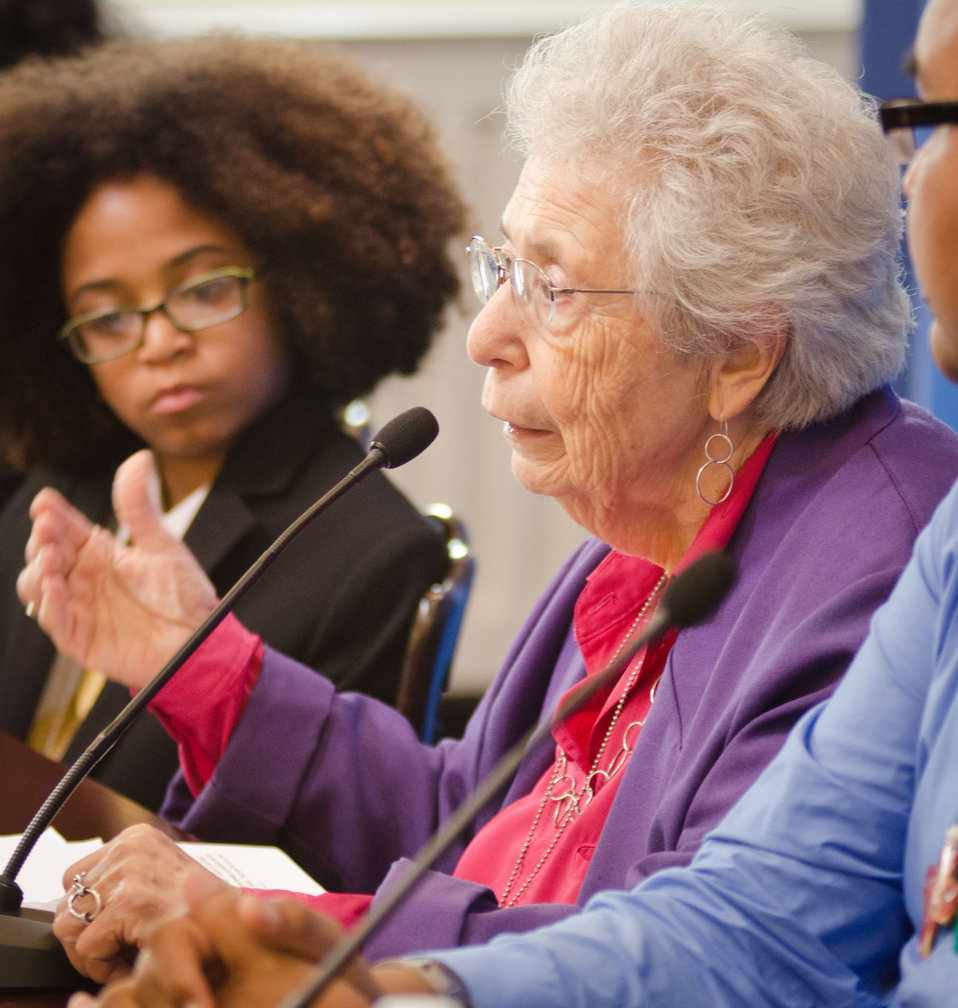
Community Food Advocates, Inc. Co-Director Kathy Goldman emphasized that the domestic hunger more of an issue than when she opened some of the first food banks, and that the situation can get worse, during a panel discussion session at an event honoring her and ten others for efforts to reduce hunger and increase food security in the U.S. and internationally at the White House Champions of Change Strengthening Food Security at Home and Abroad Event held at the White House on Thursday, September 6, 2012, in Washington, D.C.